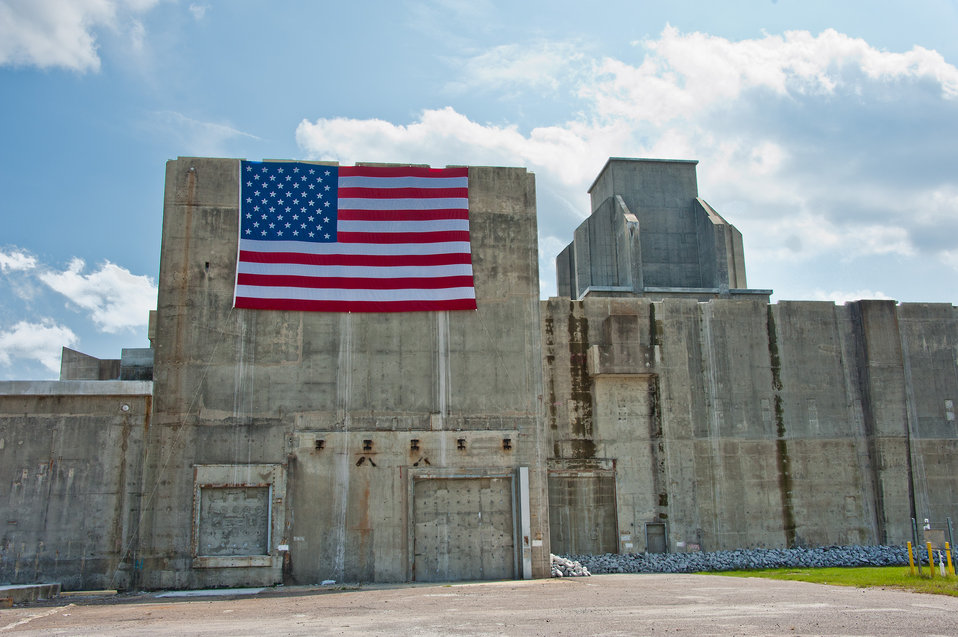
P-Reactor

P Reactor, deactivated and decommissioned under the Recovery Act.